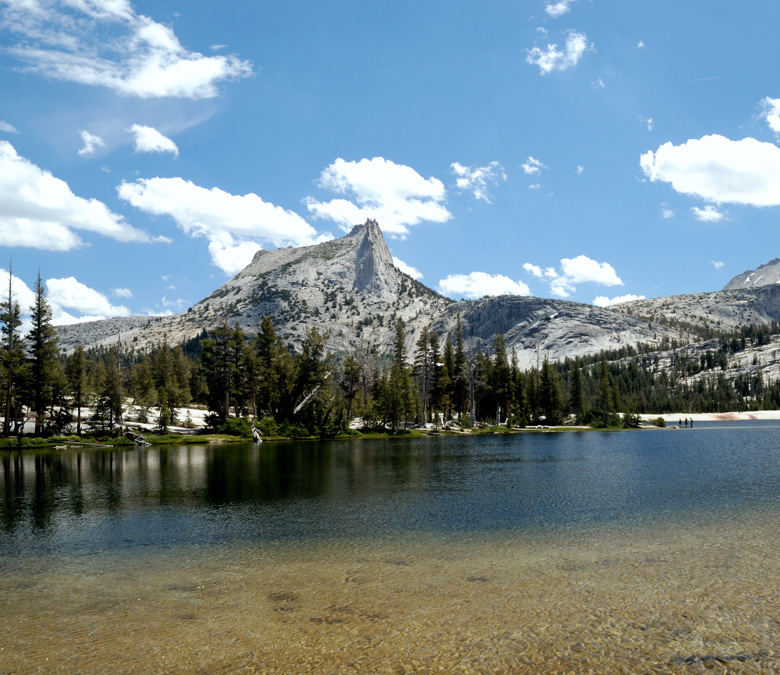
Cathedral Peak from Lower Cathedral Lake, Yosemite National Park.